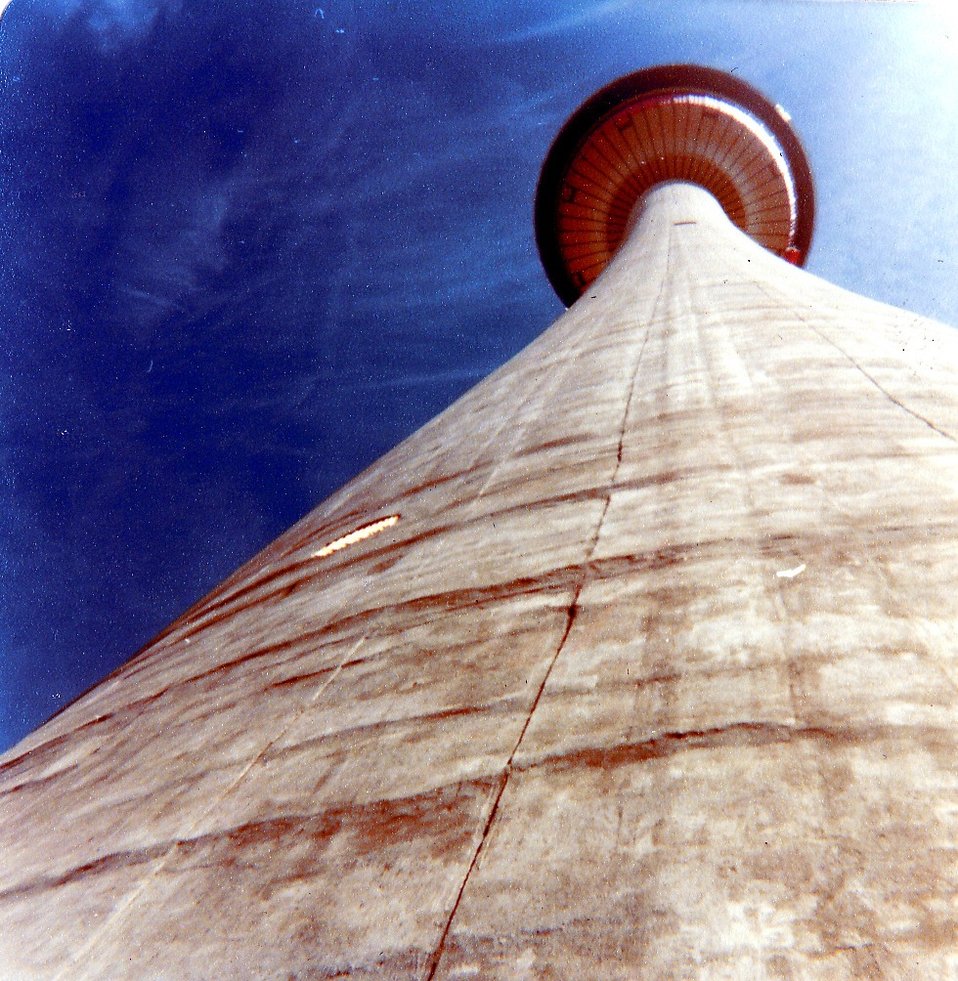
Calgary Tower in 1977. Calgary, Alberta, Canada.